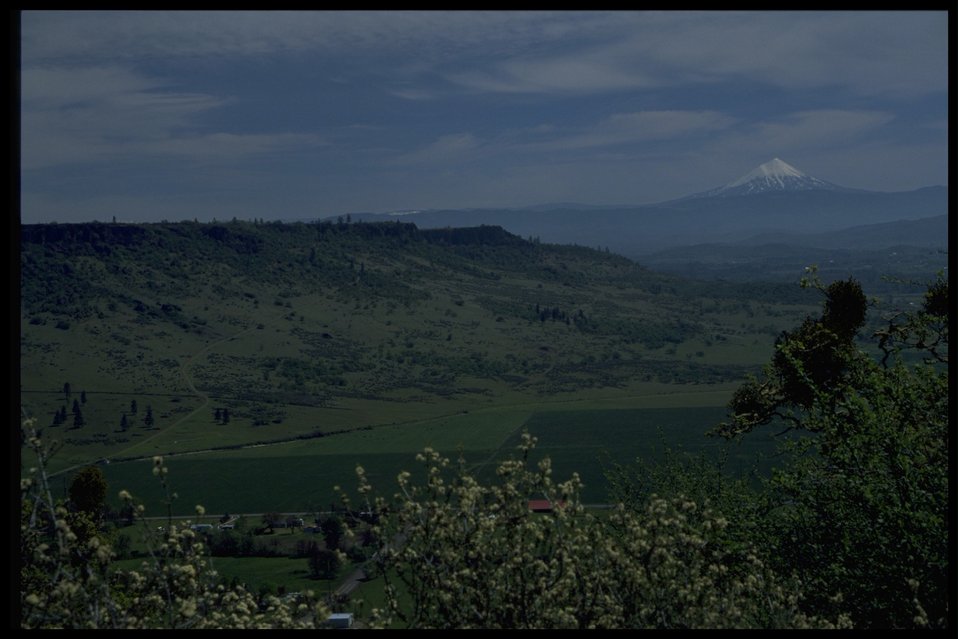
View orf Upper Table Rock, Mt. McLoughlin, Ceanothus cunetatus in foreground.